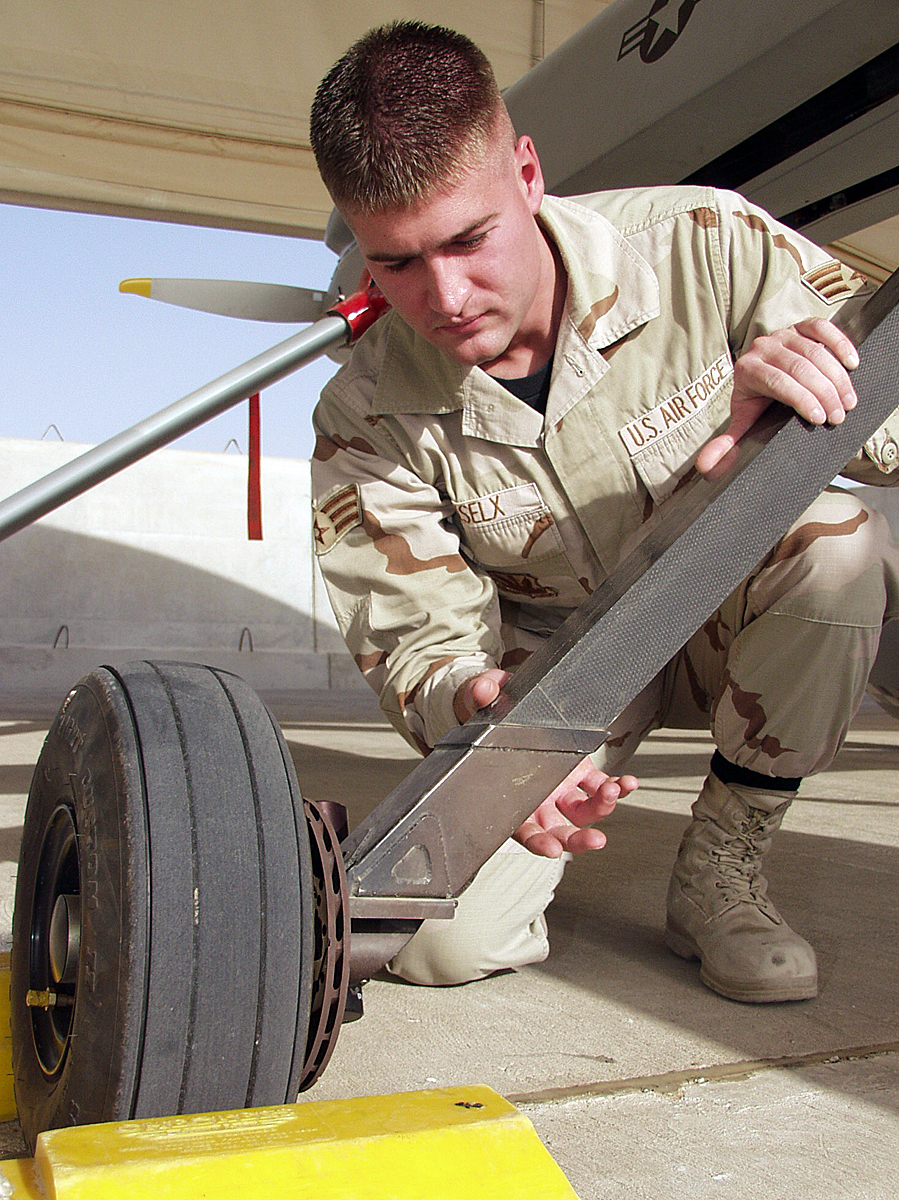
Brake check up

OPERATION IRAQI FREEDOM -- Senior Airman Jason Biselx, a 46th Expeditionary Reconnaissance Squadron crew chief, checks a brake assembly on one of the unit's MQ-1 Predator unmanned aerial vehicles during a preflight inspection. Based at a forward-deployed location, the Predator unit is participating in Operation Iraqi Freedom.